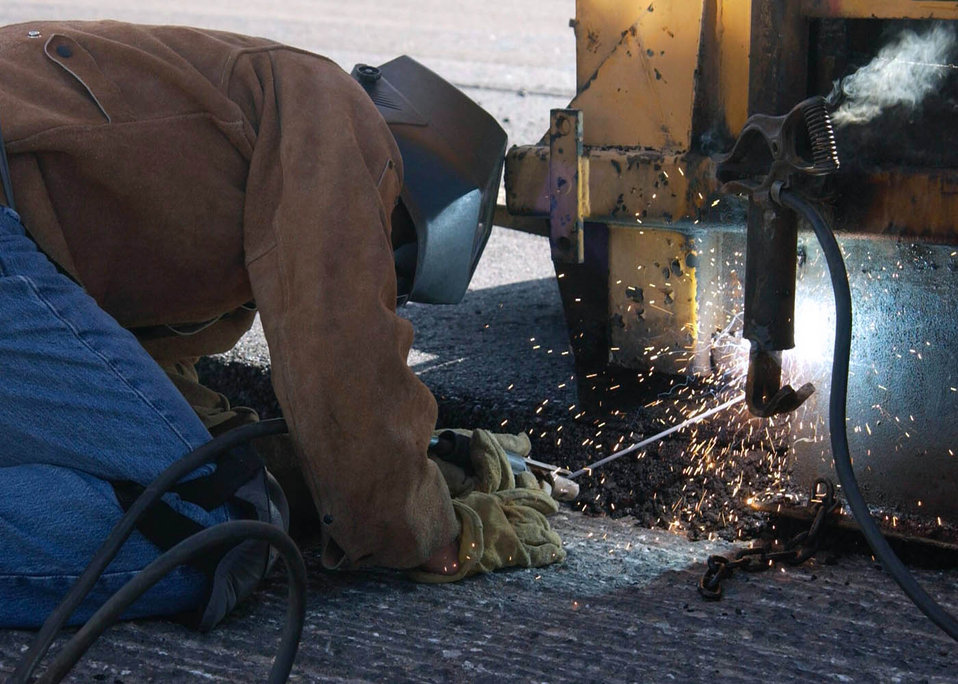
Pavement pounders

DAVIS-MONTHAN AIR FORCE BASE, Ariz. -- Sam Alvarado welds together a broken chain attachment for a paving screed May 6. Engineers with the 355th Civil Engineer Squadron used an asphalt lay-down machine to pave the new entrance to a gate here. Mr. Alvarado is a contractor with the squadron.